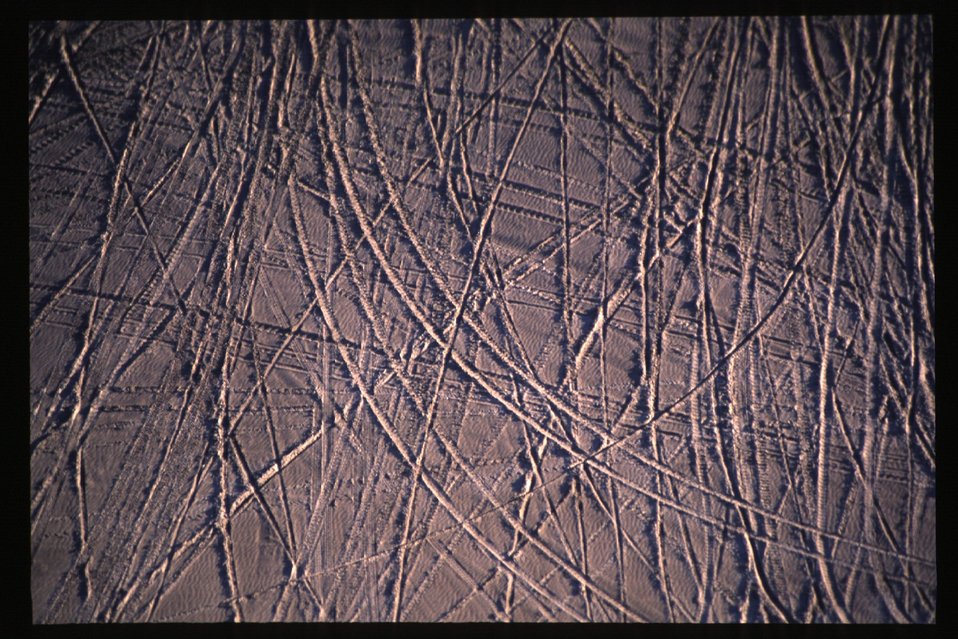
Recreation St Anthony Sand Dunes oveview Idaho Falls Field Office USRD Upper Snake River District